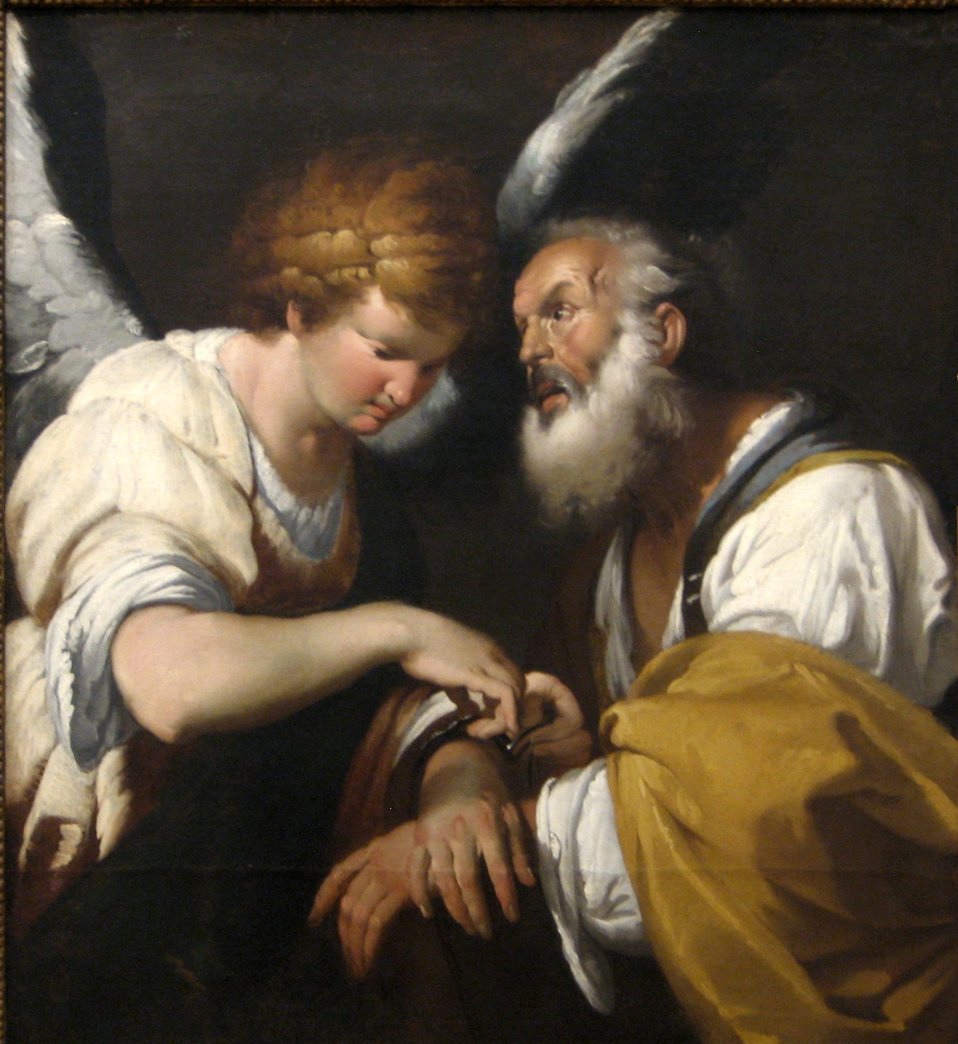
'The Release of St. Peter', oil on canvas painting by Bernardo Strozzi, c. 1635, Art Gallery of New South Wales